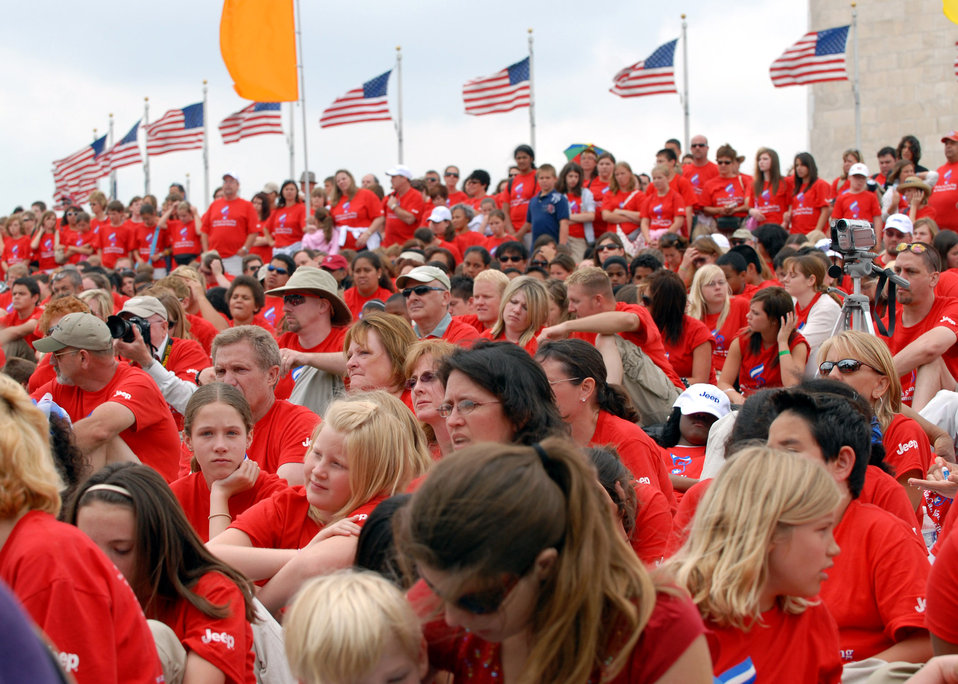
National Anthem Project concludes

Thousands of school children from across the country gather in front of the Washington Monument June 14 to participate in the National Association for Music Education's National Anthem Project grand finale in honor of Flag Day. The project is a multiyear effort to re-teach Americans